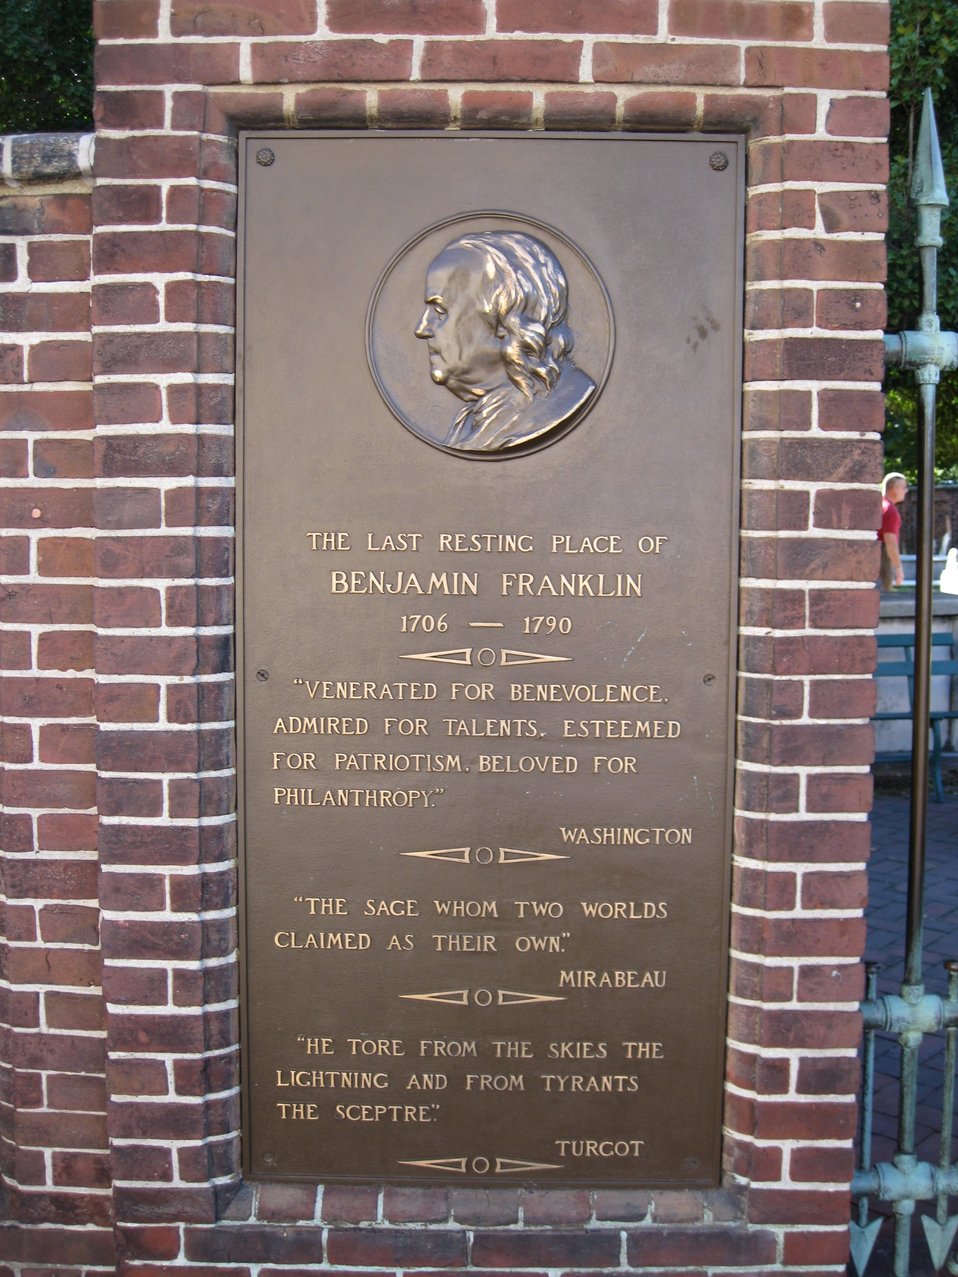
The clocktower at Independence Hall